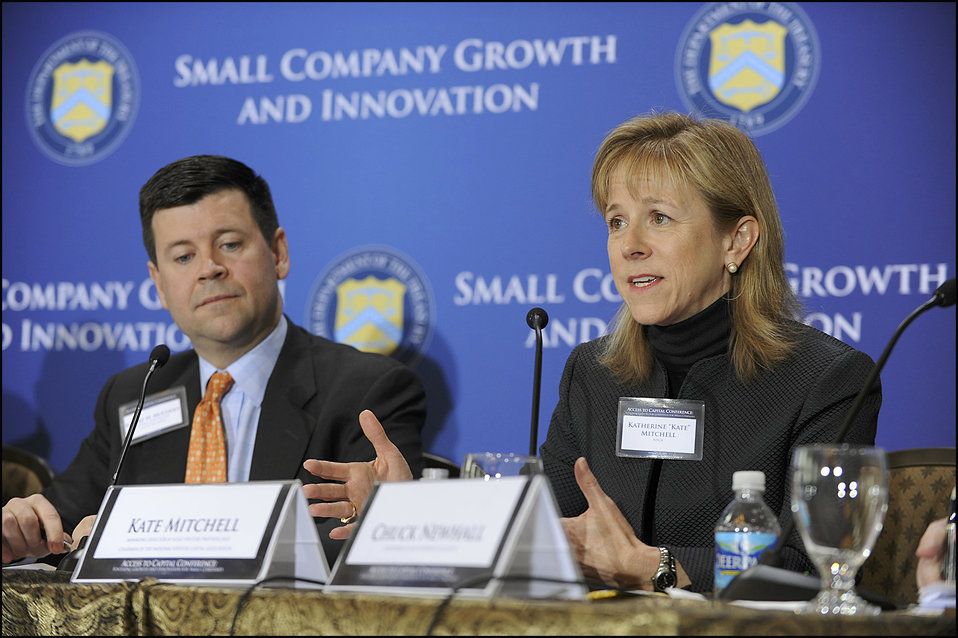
Access to Capital Conference

Kate Mitchell, Managing Director at Scale Venture Partners and Chairman of the National Venture Capital Association, speaking during her panel discussion on 'IPOs and Alternative Liquidity Platforms: Capital Market Access for Small Businesses.'